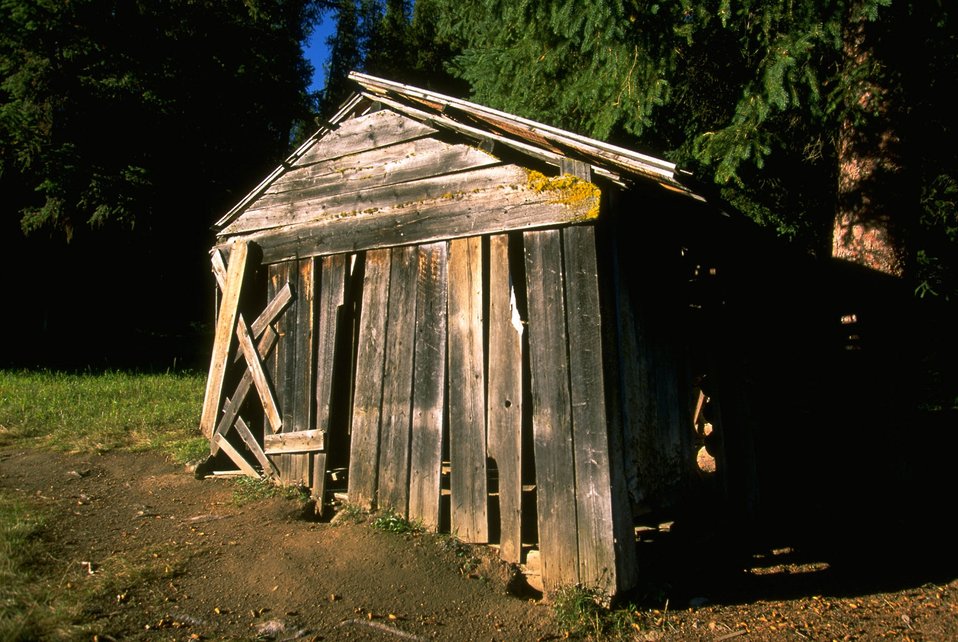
Old structure in Garnet Ghost Town